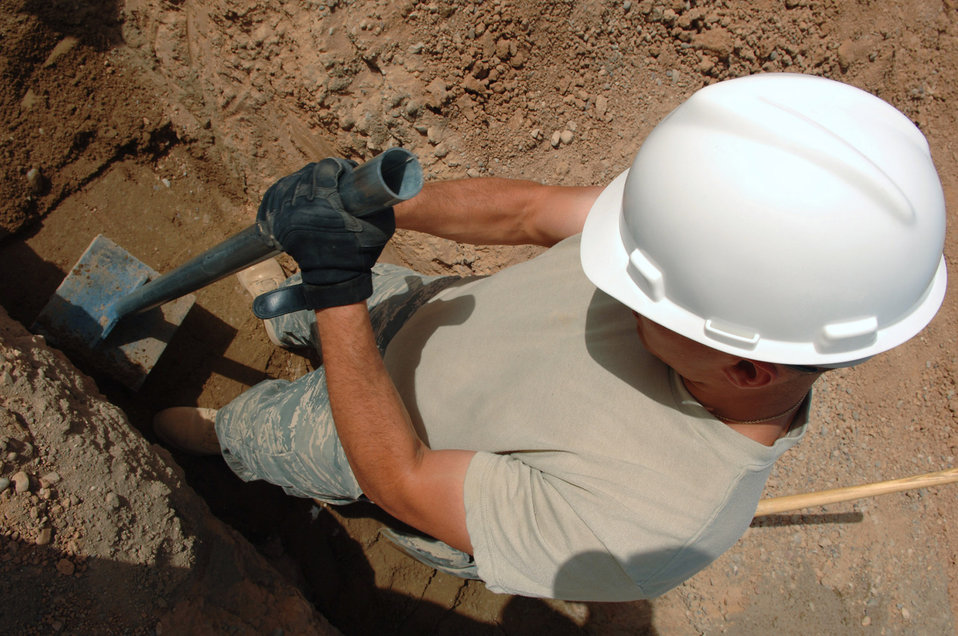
Water engineering

Staff Sgt. Steven Lucero compacts sand around water pipes to provide protection from rocks March 24 at Balad Air Base, Iraq. Base plumbers are in the midst of a pipe infrastructure replacement project involving removal of old pipes and replacing them with newer, thicker gauge pipes that will stabilize the systems. Sergeant Lucero is a 332nd Civil Engineer Squadron plumber deployed from Ellsworth Air Force Base, S.D.